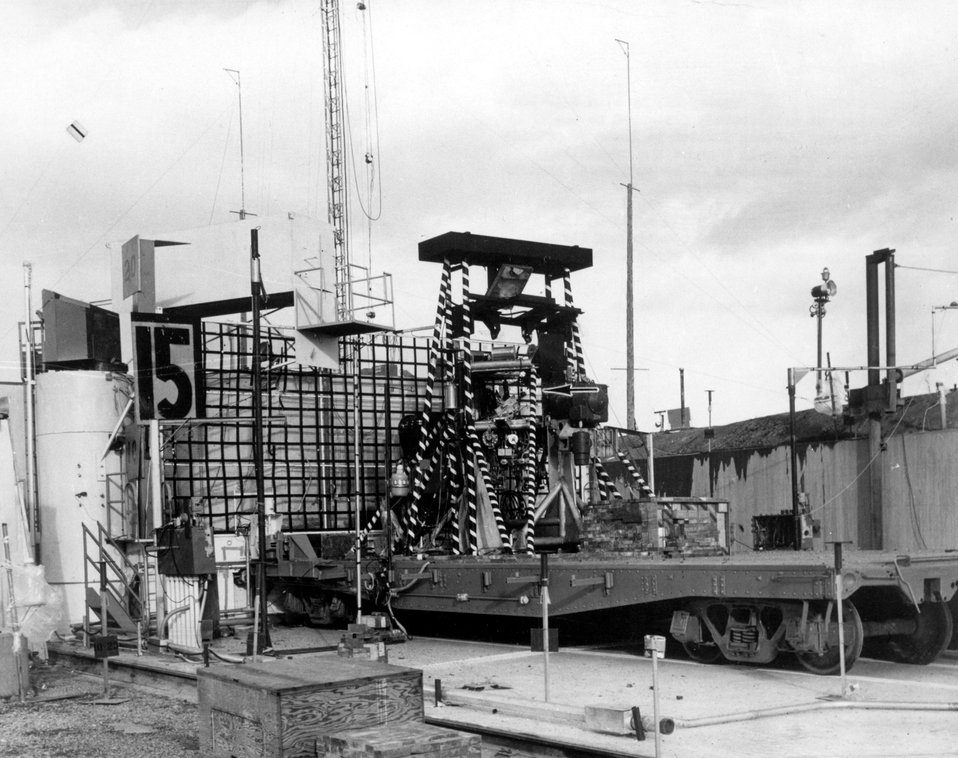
On January 11, 1966, a SNAP-10A type reactor was deliberately destroyed at the National Reactor Testing Station in Idaho to provide kinetic data which would enhance the capability to predict the consequences of an accidental nuclear excursion of a SNAP reactor. Circa 1967.